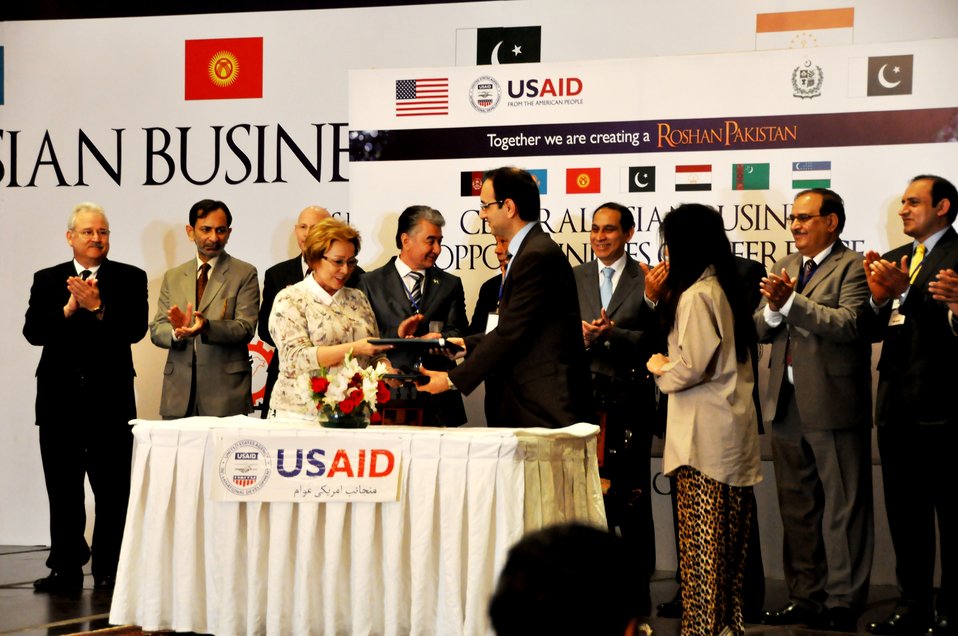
Central Asian Business Opportunities Conference

Exchange of documents at the signing ceremony of sixteen Memoranda of Understanding (MoUs) between Pakistan, Afghanistan and Central Asian businesses to promote regional trade and investment as a means to facilitate regional economic growth.